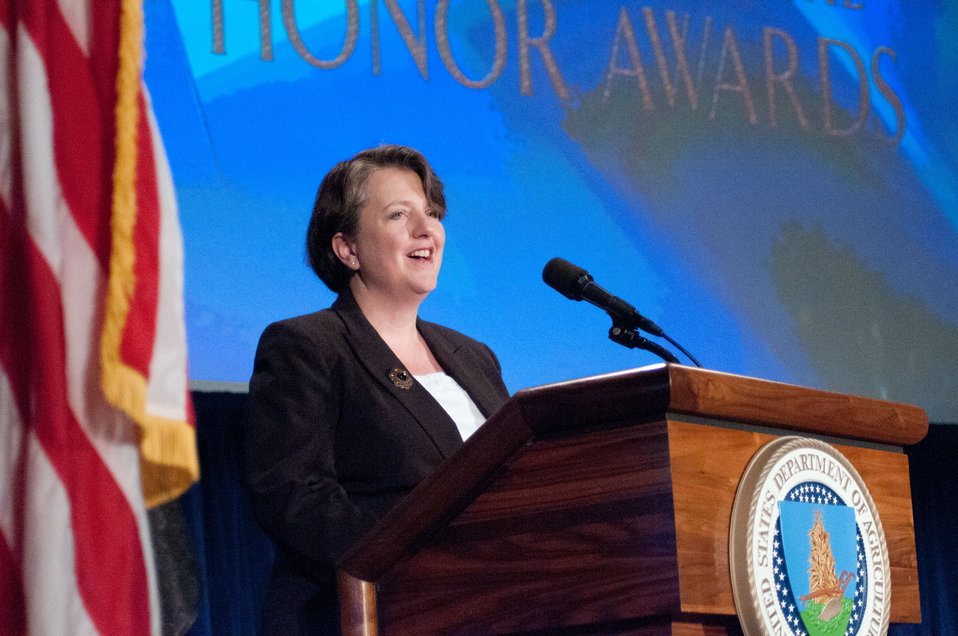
Deputy Secretary of Agriculture Kathleen Merrigan provided opening remarks and introduction of Agriculture Secretary Tom Vilsack, during the United States Department of Agriculture 63rd Secretary’s Annual Honor Awards held in the Jefferson Auditorium in Washington, D.C. on Wednesday, September 14, 2011.